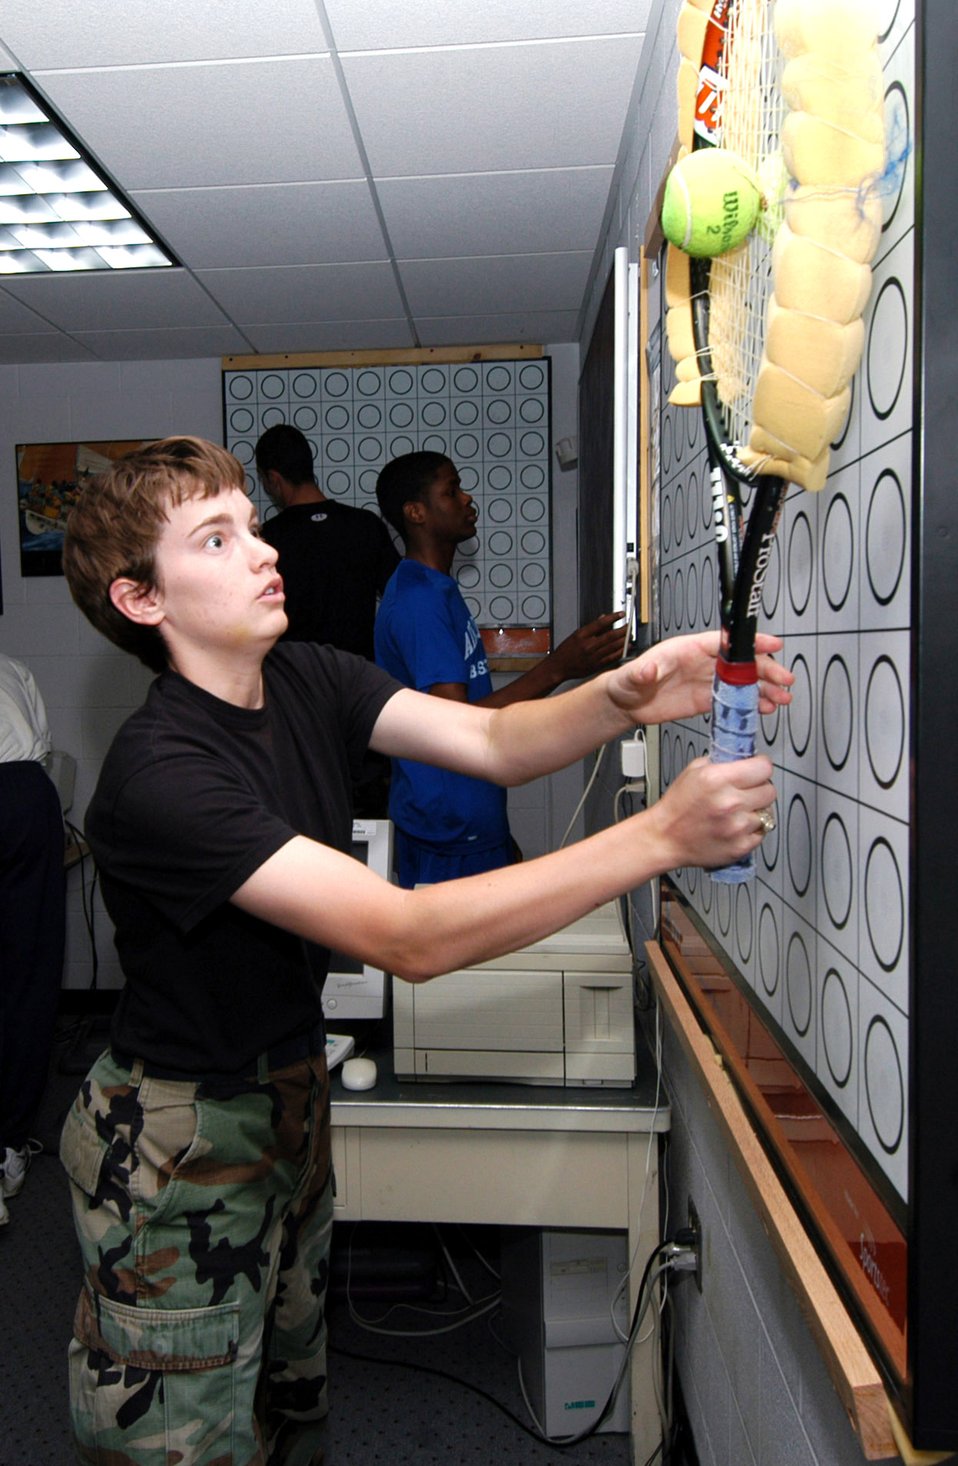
From playing fields to battlefields

Cadet 1st Class Kat Bushey tests her hand-eye coordination at the Air Force Academy Human Performance Lab on Tuesday, May 23, 2006. The lab is refining techniques to help today's warfighter adapt to high-altitude locations like those found in Afghanistan. One of the lab's major areas of focus is on visual performance improvement.